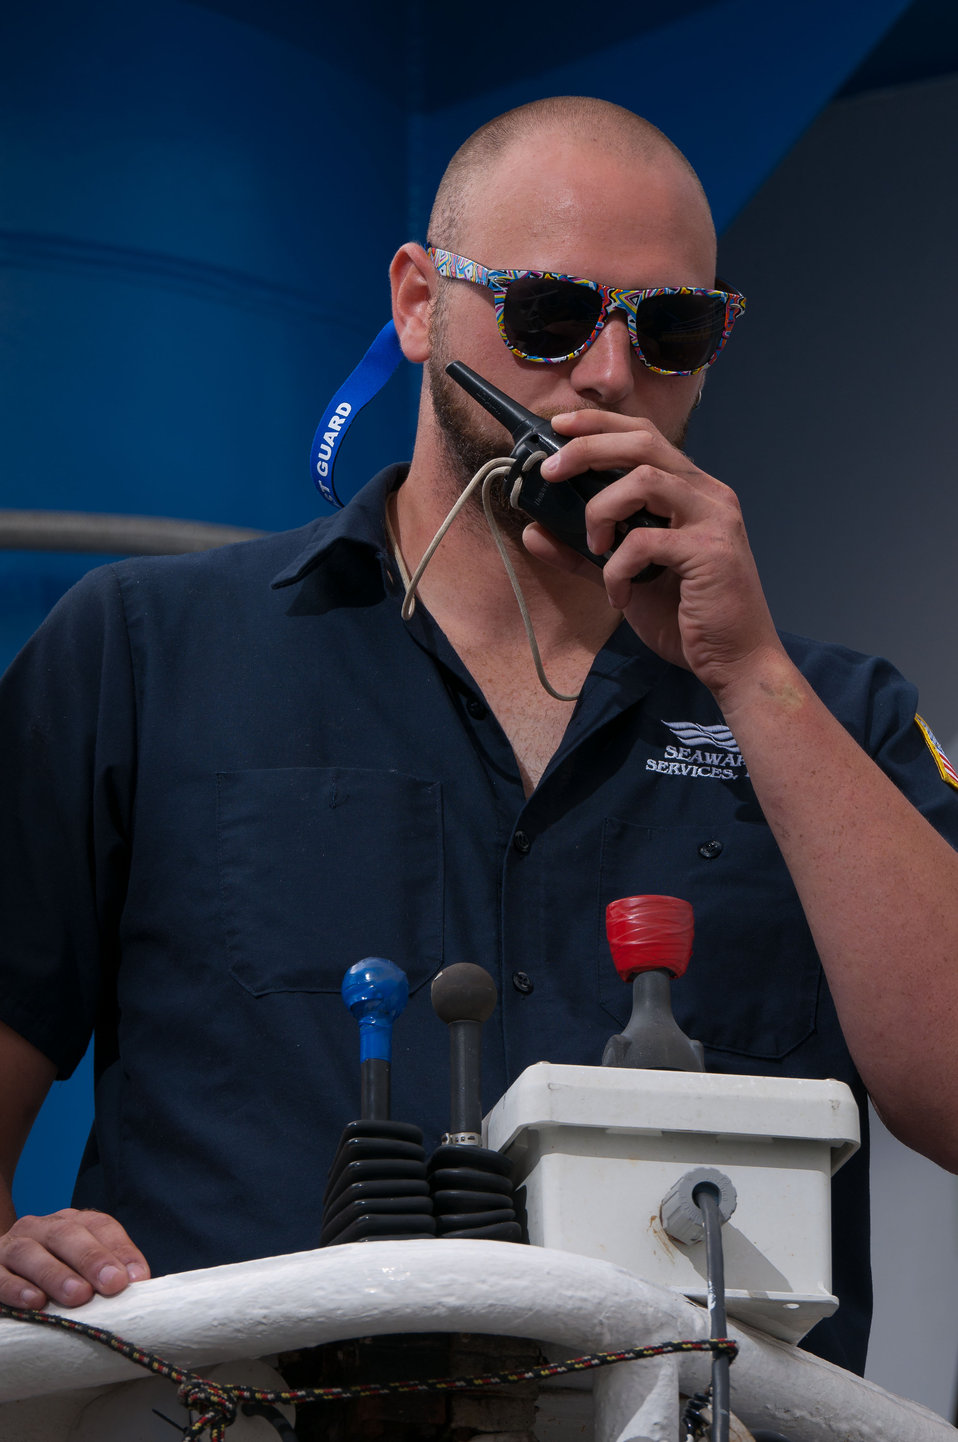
August 5, 2011 Bold fashion statement

Who said marine science couldn't be glamorous?